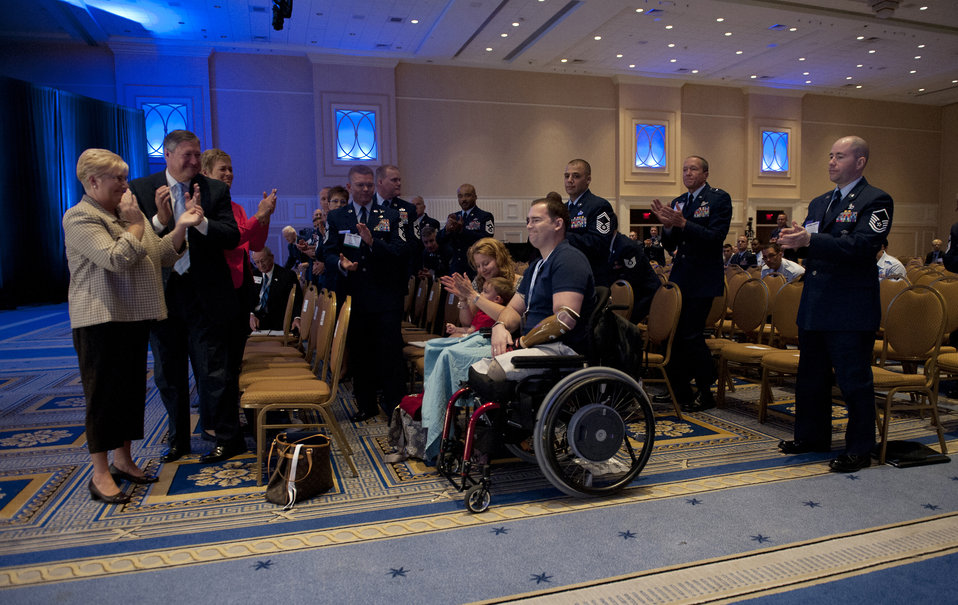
Chief Master Sgt. of the Air Force

Tech. Sgt. Joe Deslauriers, center, his son, Cameron, and wife, Lisa, are applauded by the crowd during the enlisted call of Air Force Association's Air and Space Conference and Technology Exposition in Washington, Sept. 19, 2012. Deslauriers, who is an explosives ordnance technician assigned to the 1st Special Operations Civil Engineer Squadron, Hurlburt, Fla., lost both legs in Afghanistan last year. To the left is Paula Roy; wife of CMSAF Roy; Secretary of the Air Force Michael B. Donley and his wife, Gail.